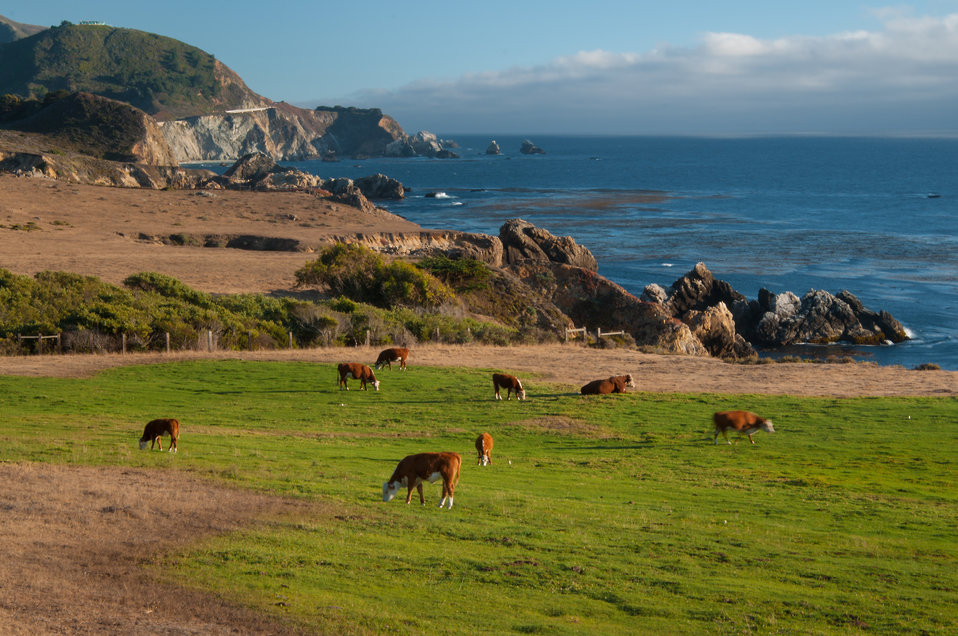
Cattle grazing on the coast of California on Tuesday, August 27, 2013.